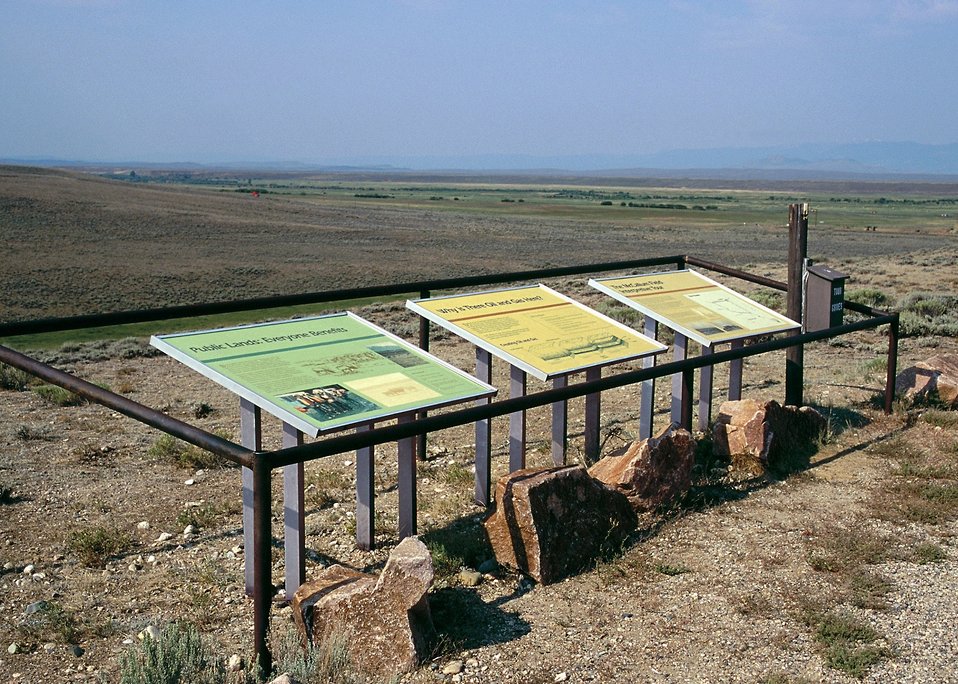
McLaccum Interp.